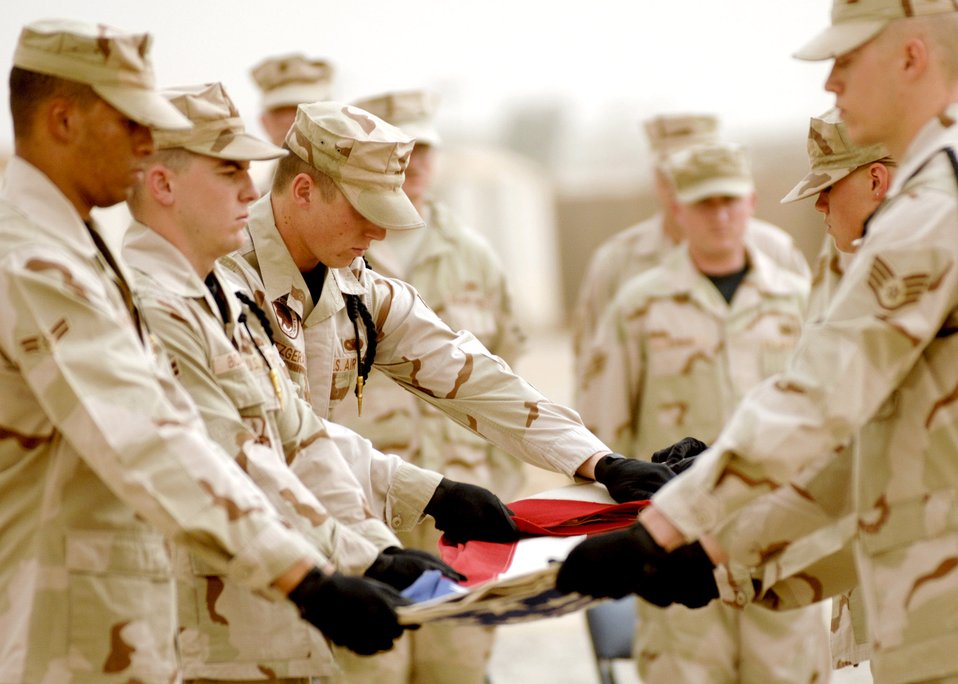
Honoring a fallen Airman

Honor Guard members from the 407th Expeditionary Group perform a flag folding ceremony during a fallen Airmen ceremony May 28 in remembrance of Staff Sgt John Self at Ali Air Base, Iraq. Sergeant Self, a security forces member assigned to the 732nd Expeditionary Security Forces Squadron at Camp Bucca, Iraq, was killed May 14 by an improvised explosive device while on patrol.